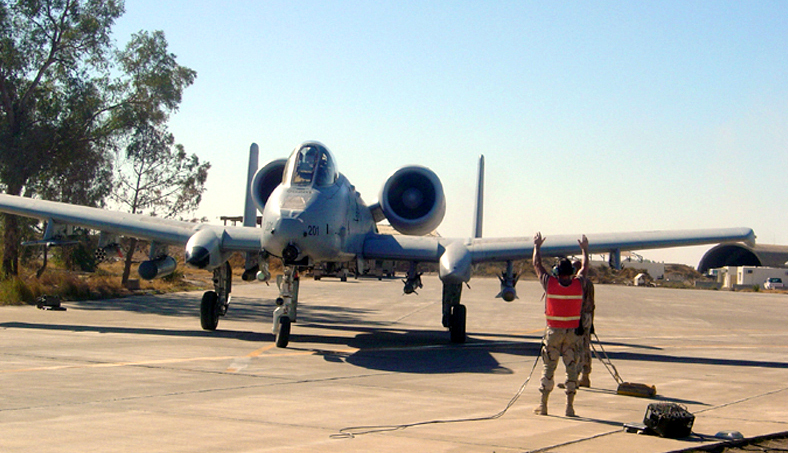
Homeward bound

KIRKUK AIR BASE, Iraq -- Staff Sgt. Mike Pilkington marshals an A-10 Thunderbolt II for preflight inspection before the 303rd Expeditionary Fighter Squadron's final mission here supporting Operation Iraqi Freedom. During the unit's eight-month deployment, squadron pilots flew 1,164 combat sorties and 3,360 flying hours without combat damage. Squadron airmen also helped establish two bases in Iraq. The reservists left Nov. 18 for Whiteman Air Force Base, Mo., where they will rejoin other airmen of the 442nd Fighter Wing. Pilkington is assigned to the 303rd EFS.